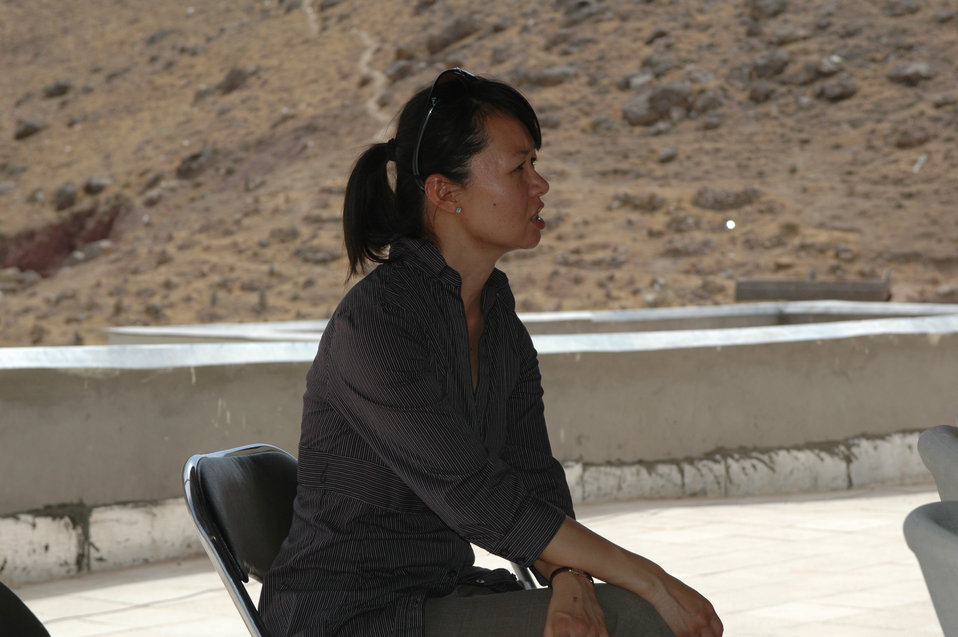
Dr Shah Visits Kandahar April 9, 2010